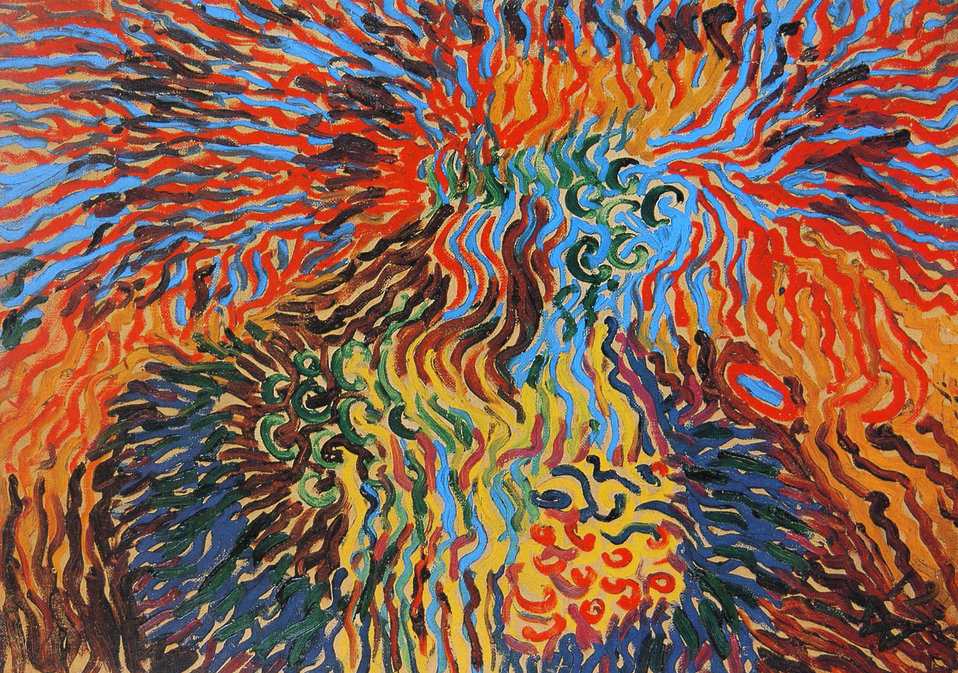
Astrale Komposition XI, Neuss, Clemens-Sels-Museum